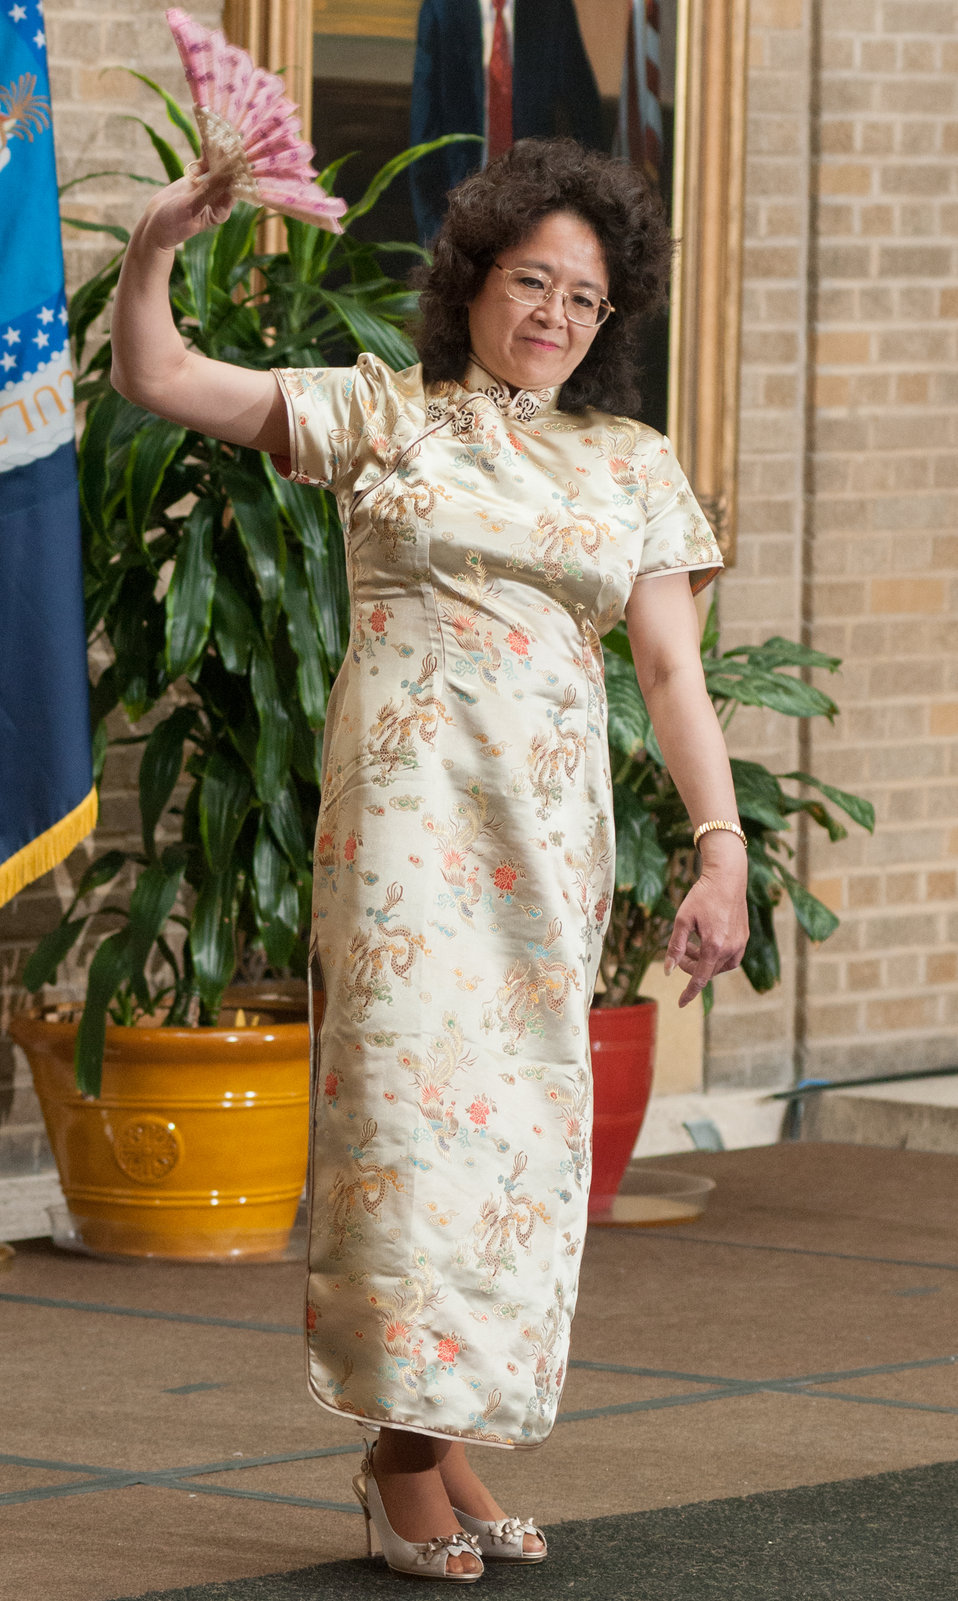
Traditional clothing from various Asian countries were demonstrated during this show of clothing, part of the U.S. Department of Agriculture (USDA) Asian Pacific American Heritage Month Observance program, at the USDA headquarters, Whitten Building patio, in Washington, D.C., on Thursday, May 23, 2013. This year’s theme is “Building leadership; Embracing the Cultural Values and Inclusions.”